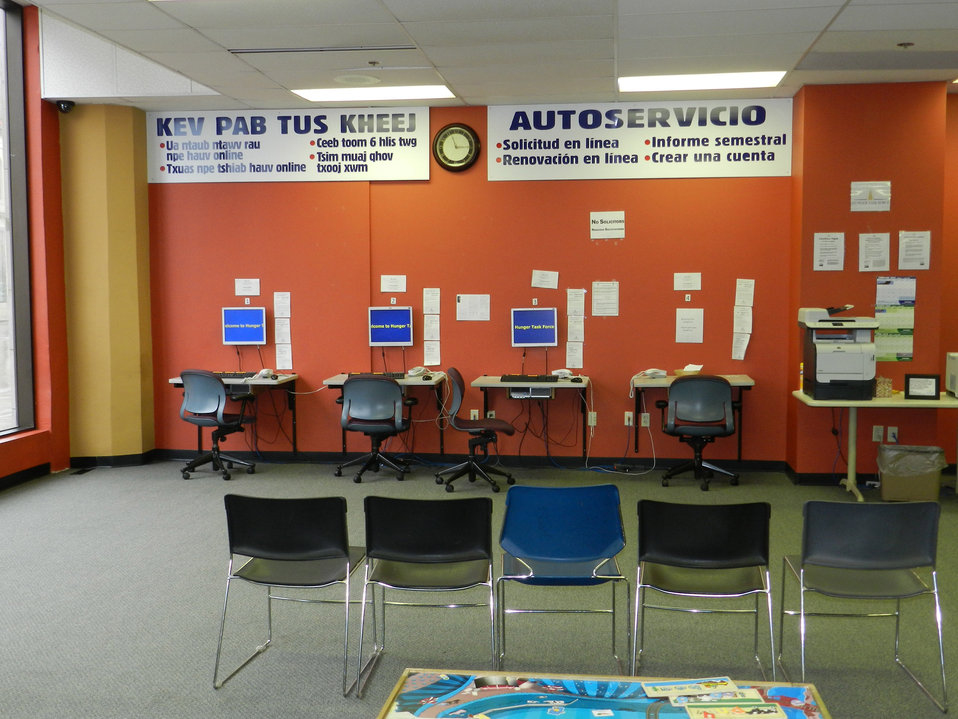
Robles ComputerWall2

The Robles Center in Milwaukee, WI has a wall in their computer area with self-service signs in Spanish and Hmong to assist customers in obtaining food assistance through the U.S. Department of Agriculture’s (USDA) Food Nutrition Service (FNS) Supplemental Nutrition Assistance Program (SNAP). The Center was established in the 1970’s and was the first social services office serving Milwaukee’s predominantly Latino south side.